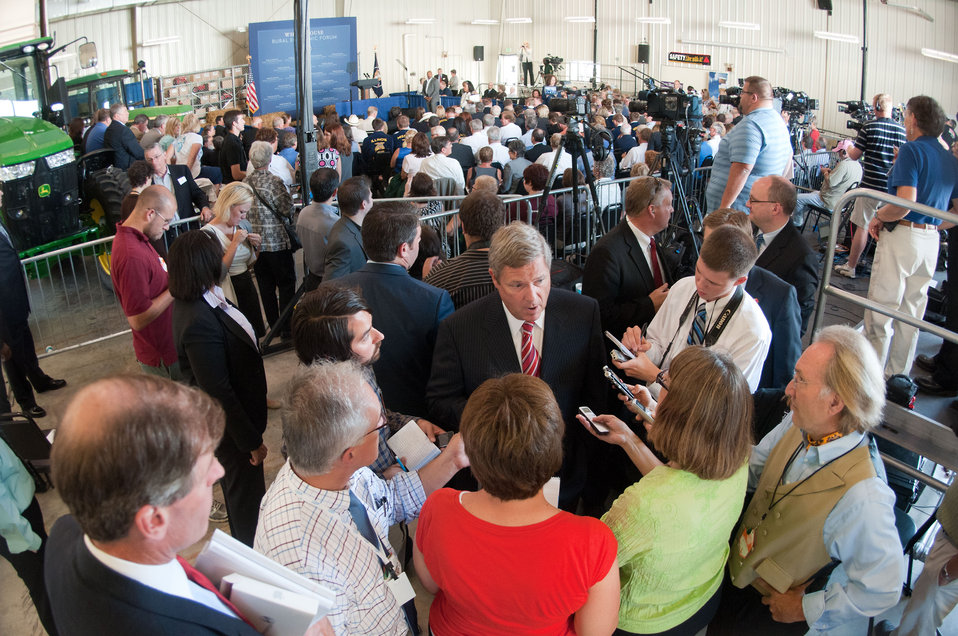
U.S. Department of Agriculture Secretary and chair of the White House Rural Council, Tom Vilsack at the Northeast Iowa Community College, IA, prior to the White House Rural Economic Forum, on Tuesday, August 16, 2011.